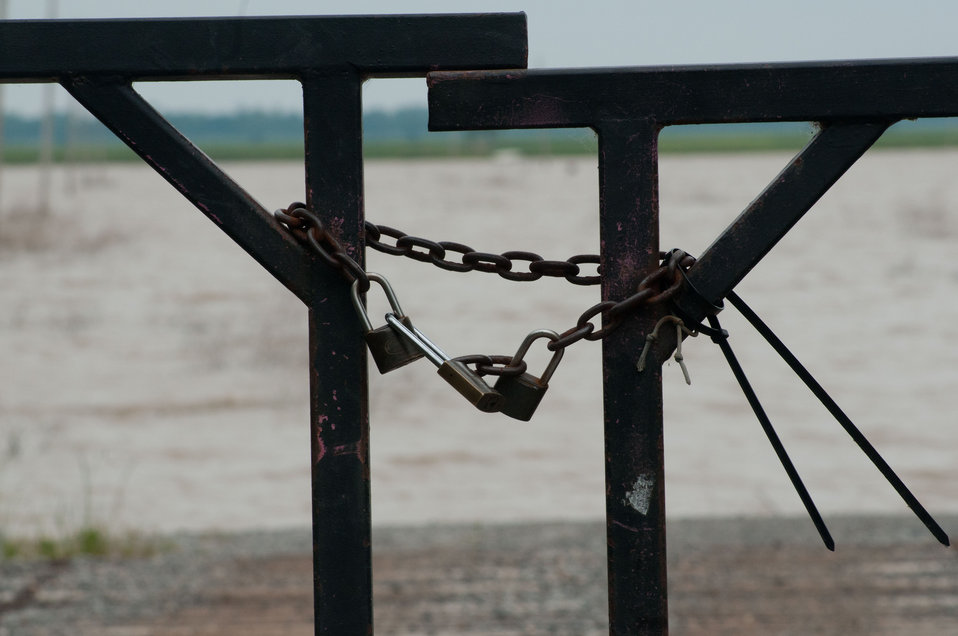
Floods waters from Mississippi River inundated casinos and farms that surround Tunica, MS, on Sunday, May 15. 2011.